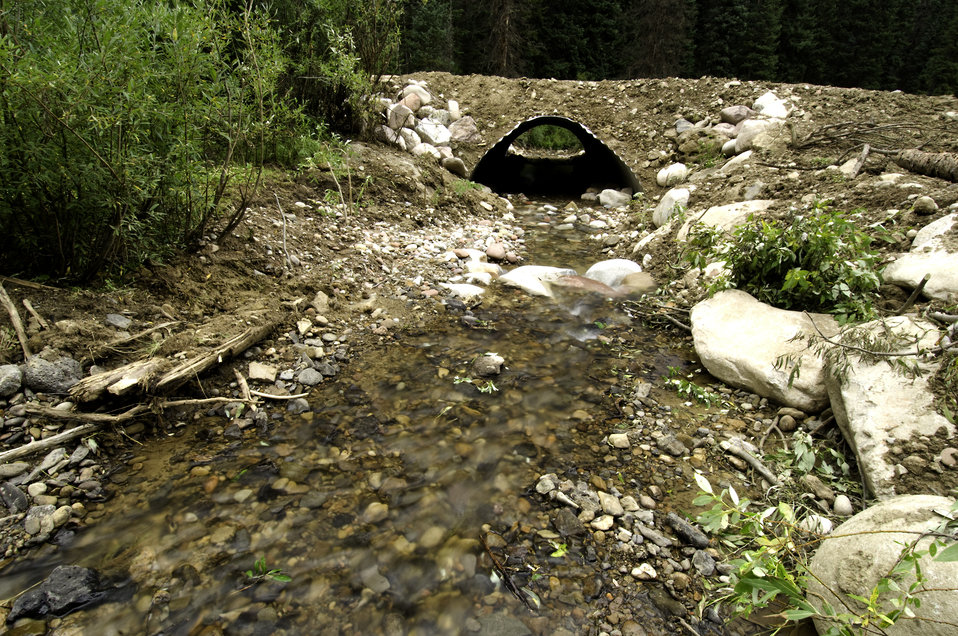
Stream crossings by roads can pose serious threats to fish ecosystems. The cumulative effect of culverts, fords, and other structures throughout a stream channel can significantly change the streams geomorphology (study of the characteristics, origin, and development of landforms) and impair fish passage by blocking valuable spawning and rearing habitat. The U.S. Department of Agriculture (USDA) Forest Service’s (FS) Aquatic Organism Passage (AOP) project is to identify the stream crossings in National Forests that have poorly designed crossings and replace those crossings to improve water quality and native habitat. This photo was taken in the White River National Forest, Glenwood Springs, Colorado on August 17, 2007.USDA photo.